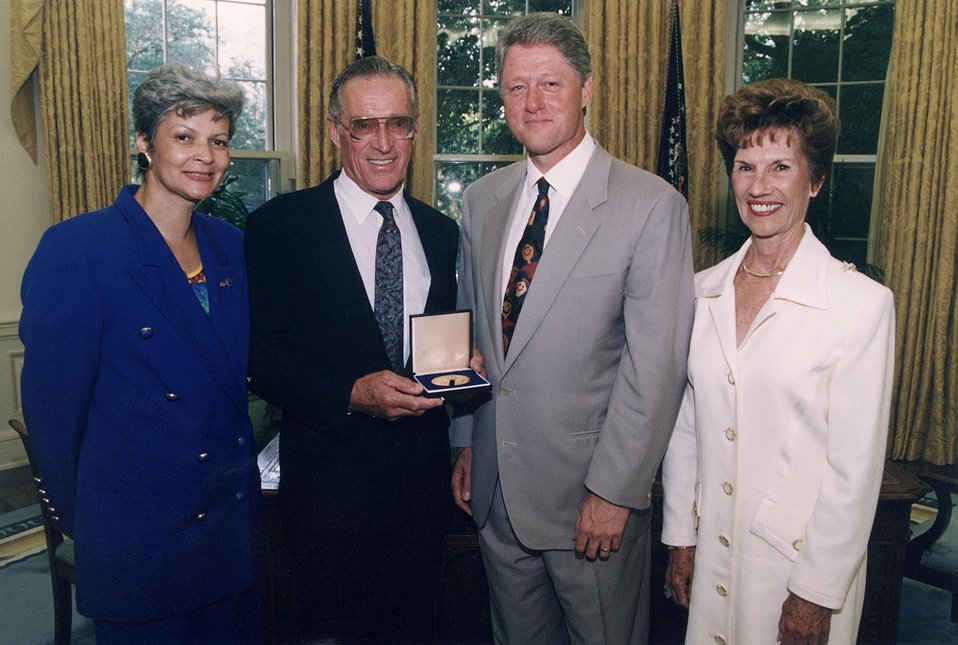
Left to right:. Secretary of Energy Hazel R. O'Leary, John S. Foster, President William Clinton, and Mrs. John Foster.